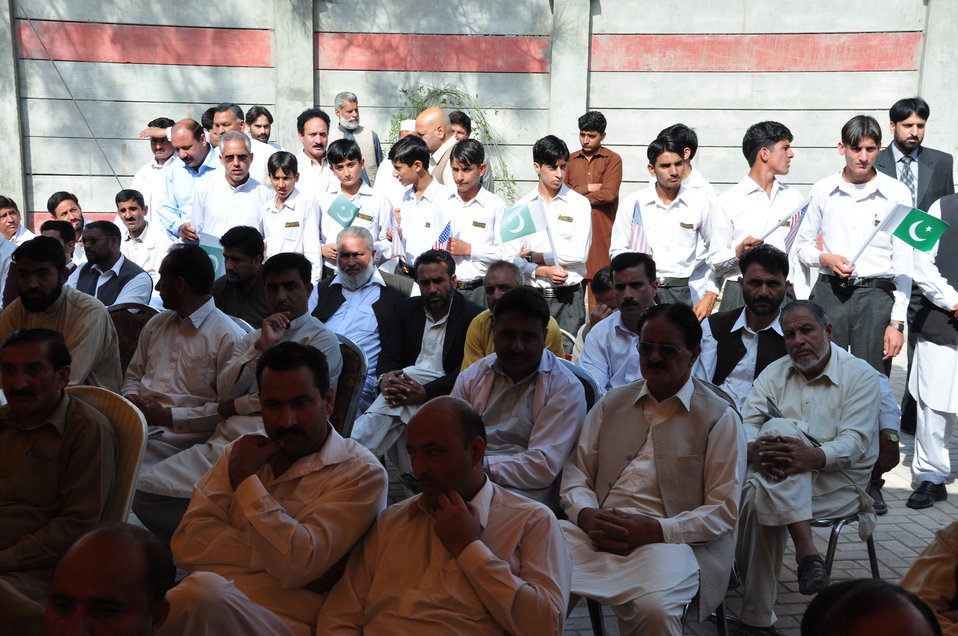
Dhirkot Reconstructed Hospital Inauguration Pakistan Reconstruction Program 13